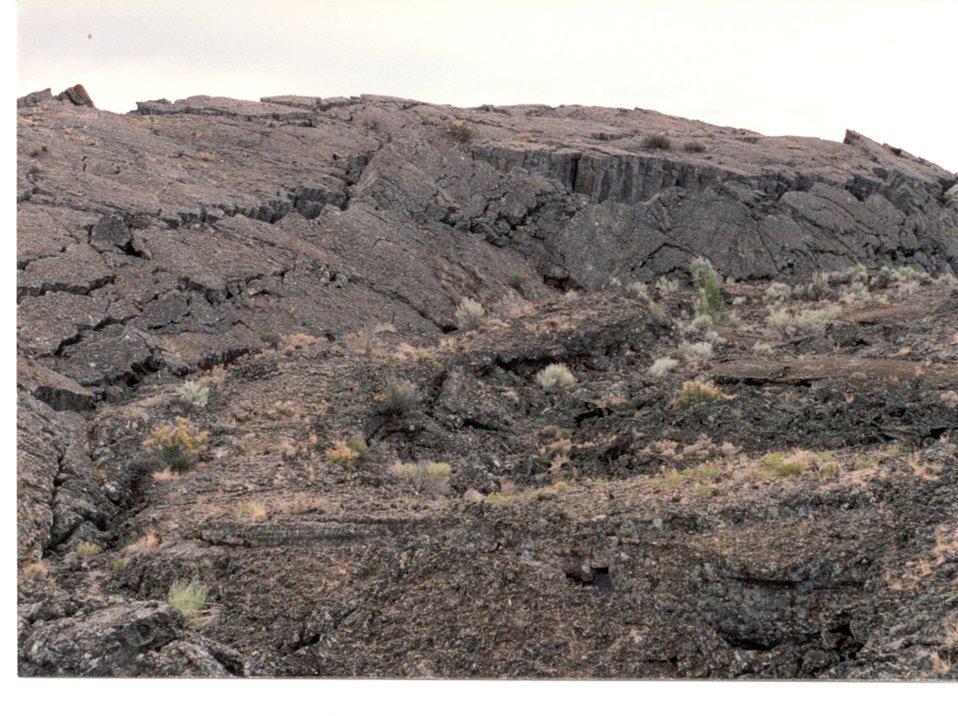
Pressure Ridge Craters of the Moon Shoshone Field Office USRD Upper Snake River District